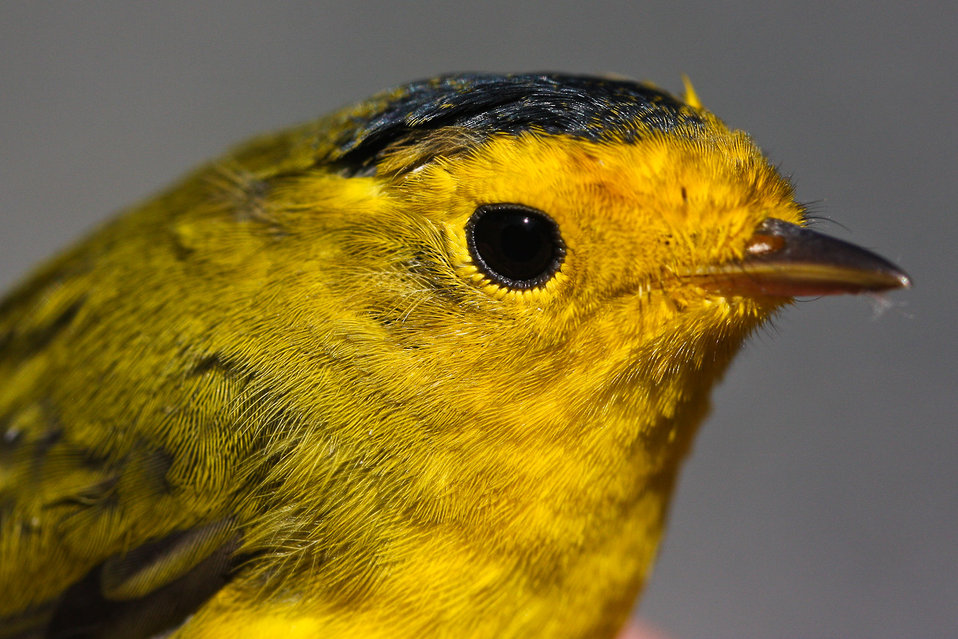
Wilson's Warbler

Lisa Hupp/USFWS